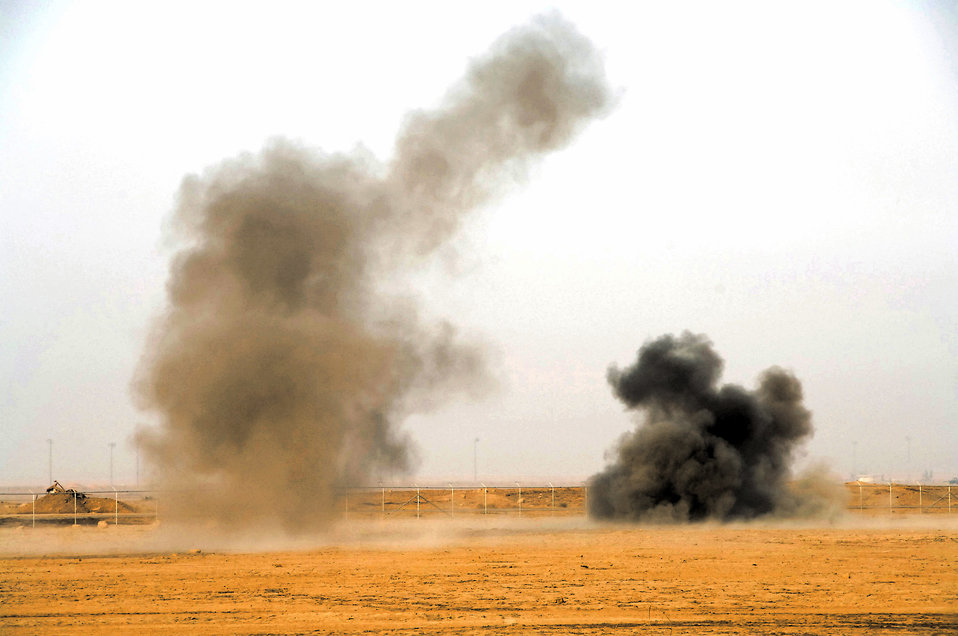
UXOs rise from depths

Two detonations erupt when a team of explosive ordnance disposal Airmen use C4 on two piles of unexploded ordnance March 26 at Ali Base, Iraq. The team of 12, including 407th Expeditionary Civil Engineer Squadron EOD members and augmentee Airmen, searched 159 acres of fields the previous day to remove all UXOs from the fields.